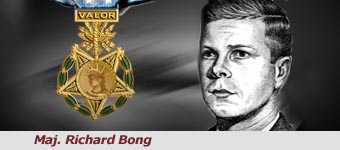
Maj. Richard Bong, Medal of Honor recipient, was the